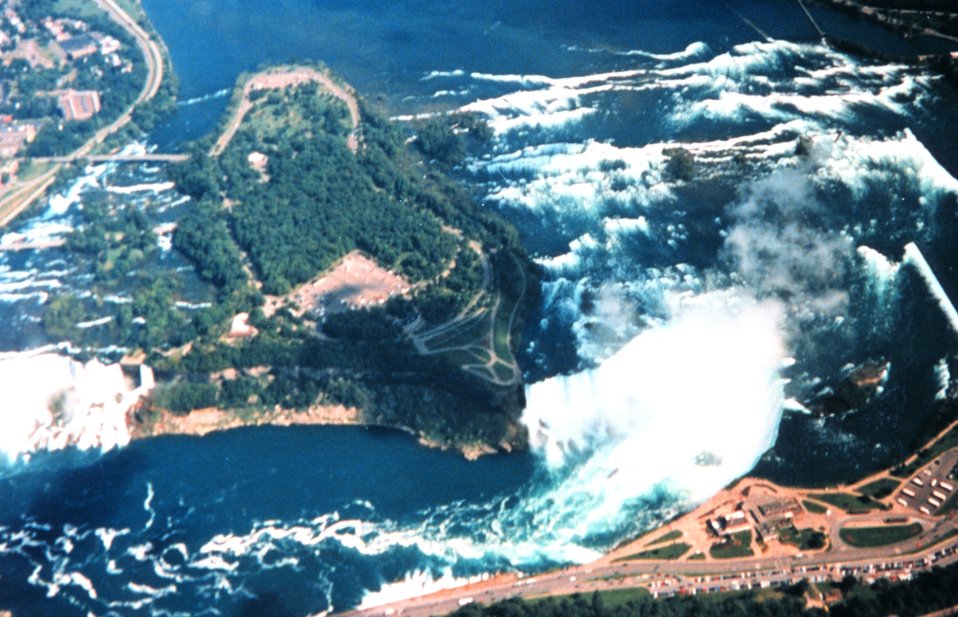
Niagara Falls as seen during Shoals Lidar survey of Niagara River.